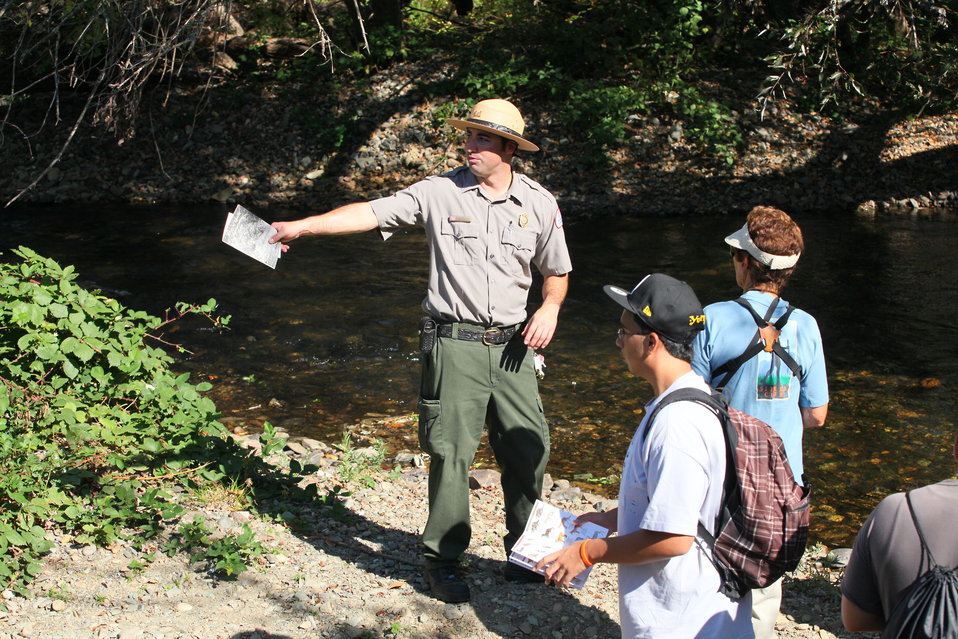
A river full of education

Park ranger Gary Basile (center), with the U.S. Army Corps of Engineers Sacramento District, guides students along the Calaveras River near the New Hogan Dam, Valley Springs, Calif., Oct. 22, 2011. The students, from Stagg and Bear Creek high schools of Stockton, Calif., experienced real life learning through activities including water sampling, aquatic life samples, an underwater video camera and fish habitats as part of the Calaveras River Education and Appreciation Day. The U.S. Army Corps of Engineers Sacramento District helped host the event, in partnership with the U.S. Fish & Wildlife Service’s “Connecting People with Nature” program.